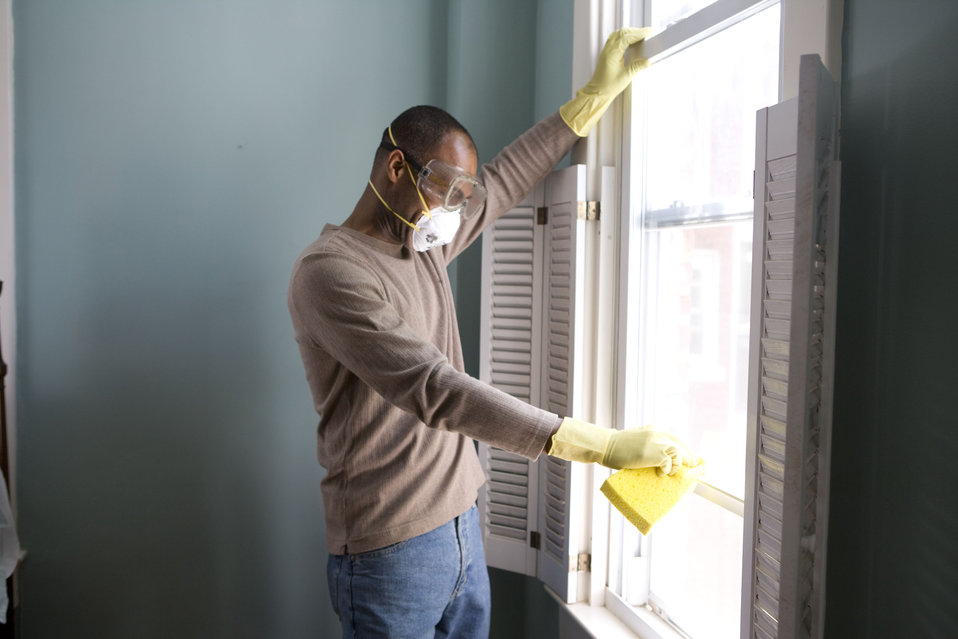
When renovating a home, you should use a damp sponge or cloth to clean dust collected on a window sill, as the dust may contain asbestos or lead-based paint. Home maintenance is an ongoing process for any homeowner, and here we see an African-American man as he was preparing a window in his home for a general cleaning.